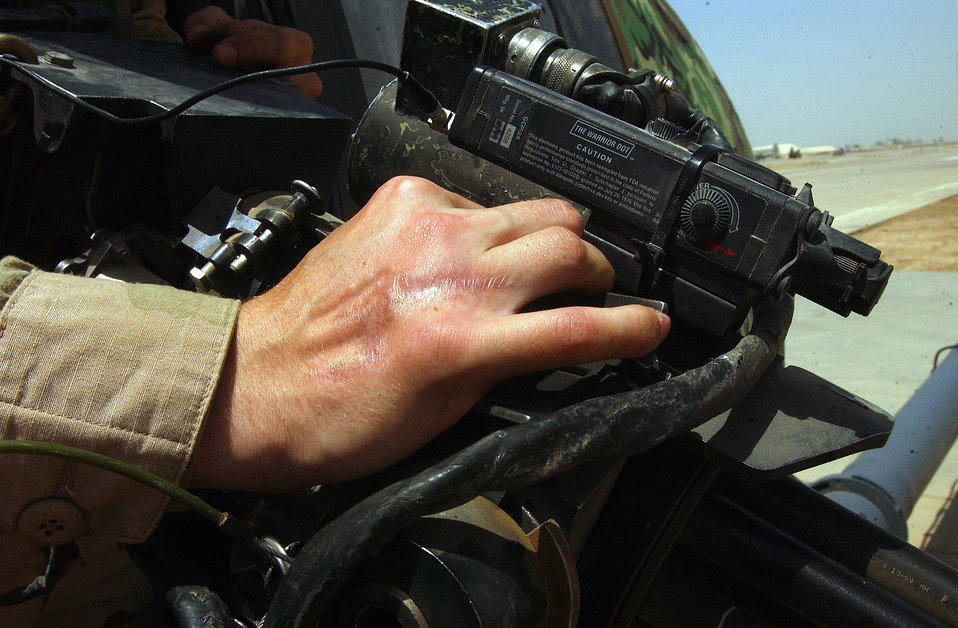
Airman fights his way back to Iraq after serious injury

BALAD AIR BASE, Iraq -- In 2003, Senior Airman Douglas Batchelder suffered numerous injuries from flying shrapnel when a rocket careened off his back and exploded in his tent in Baghdad. After five hand surgeries, he is back in Iraq with the 64th Helicopter Maintenance Unit here.